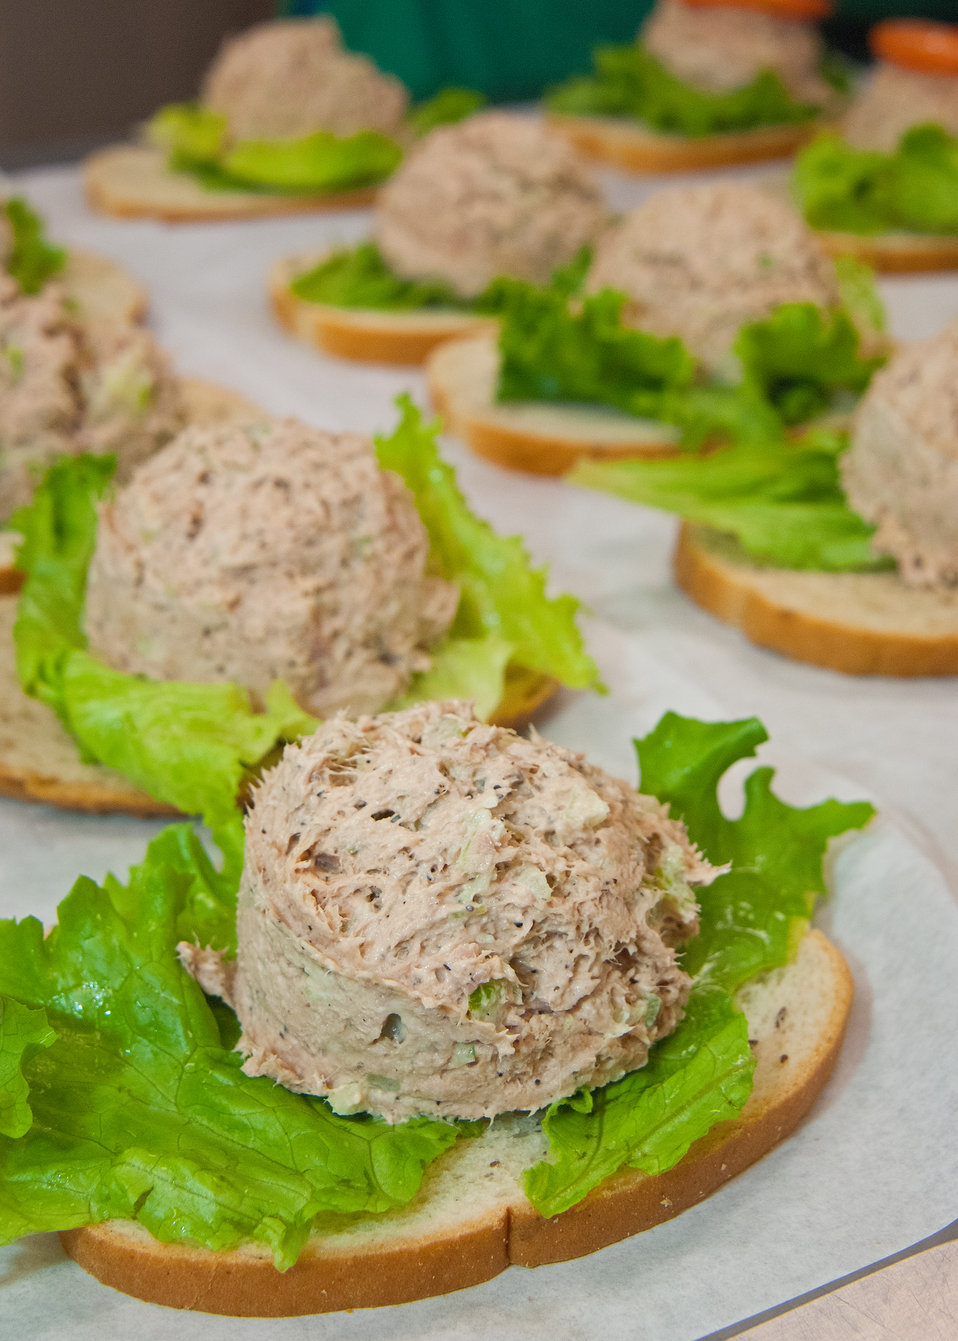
Tuna fish sandwiches for the National School Lunch Program at Washington-Lee High School in Arlington, Virginia, on Wednesday, October 19, 2011. The National School Lunch Program is a federally assisted meal program administered by the United States Department of Agriculture, Food and Nutrition Service operating in public, nonprofit private schools and residential child care institutions. It provides nutritionally balanced, low-cost or free lunches to children each school day.